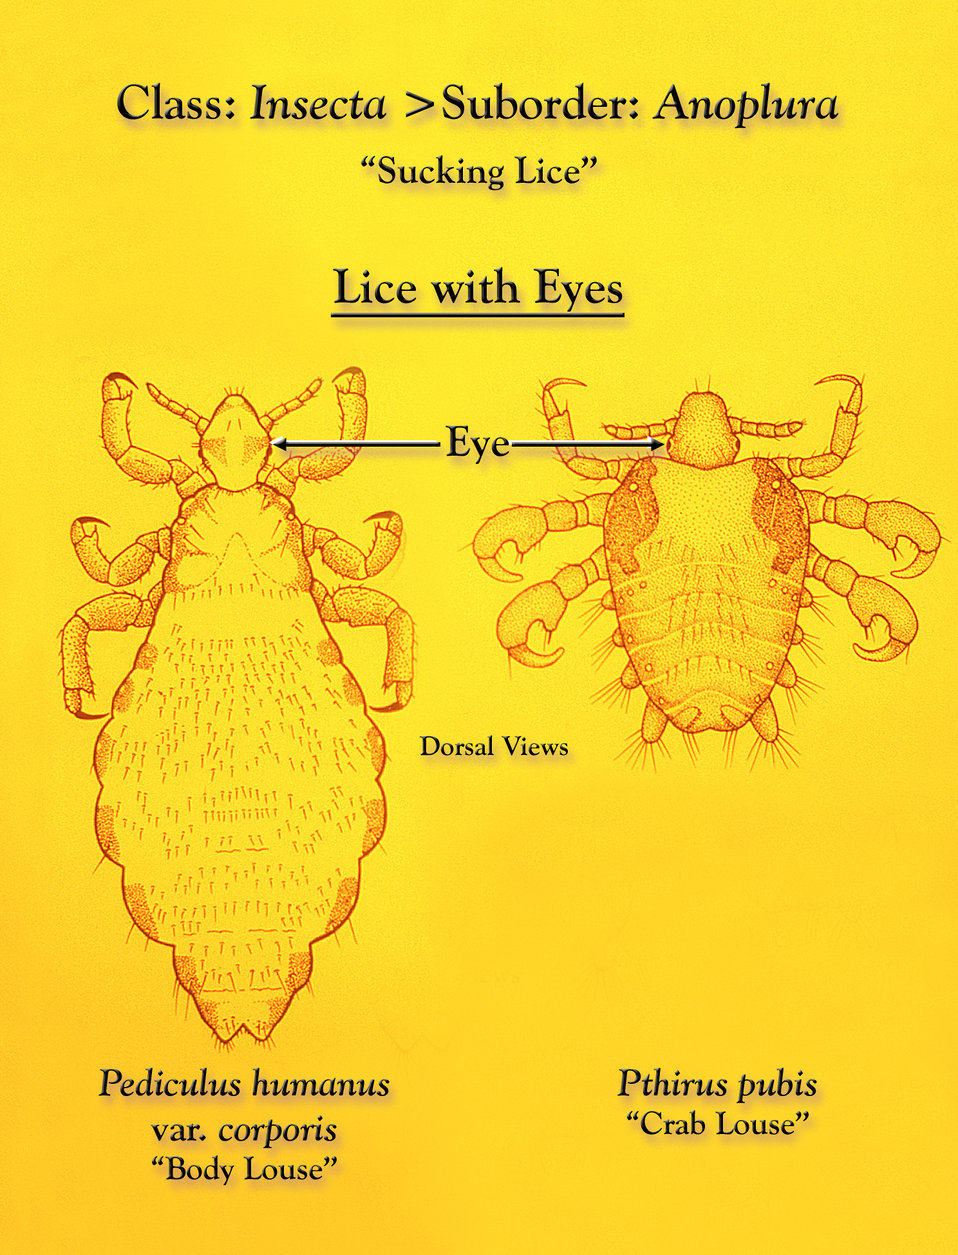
This illustration depicts two members of the suborder Anoplura or 'sucking lice', the 'body louse', Pediculus humanus var. corporis (Lt), and a 'crab louse', Pthirus pubis (Rt).